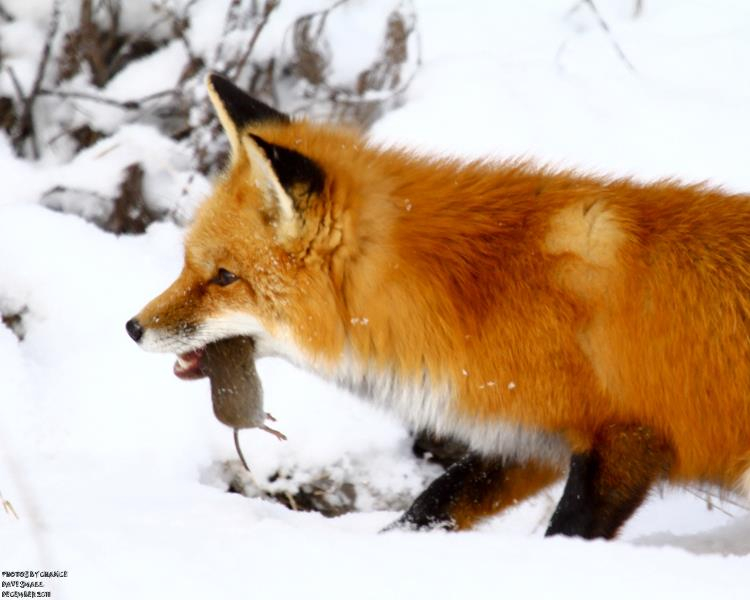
red fox hunting, scene 2

Sunkhaze Meadows National Wildlife Refuge, ME
January 3, 2012